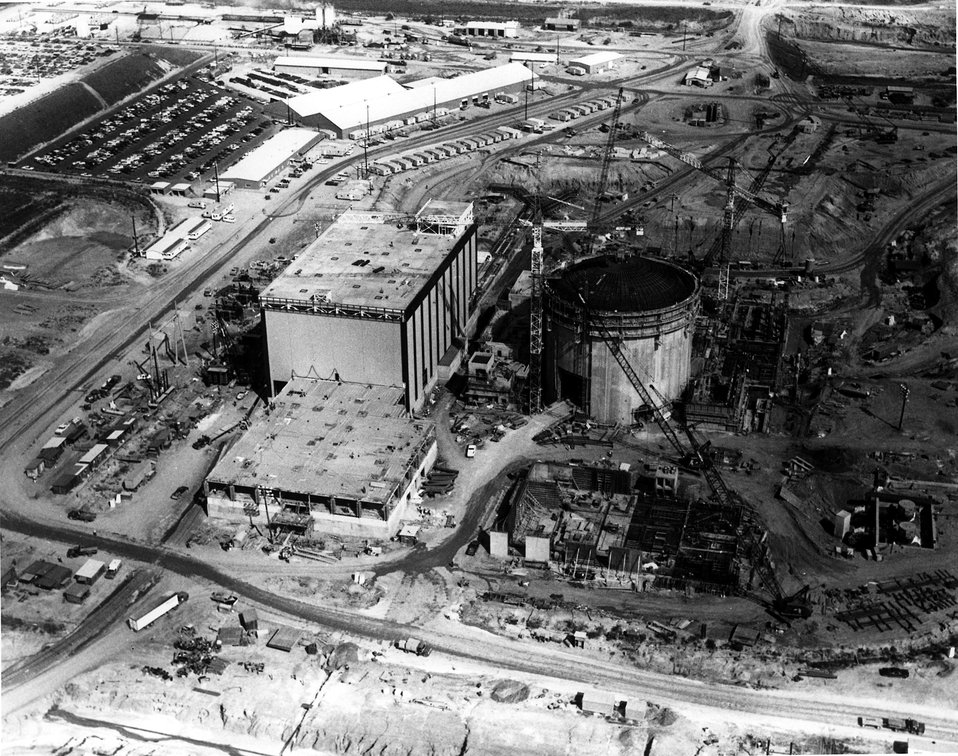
Construction activities at the Joseph M. Farley Power Plant.